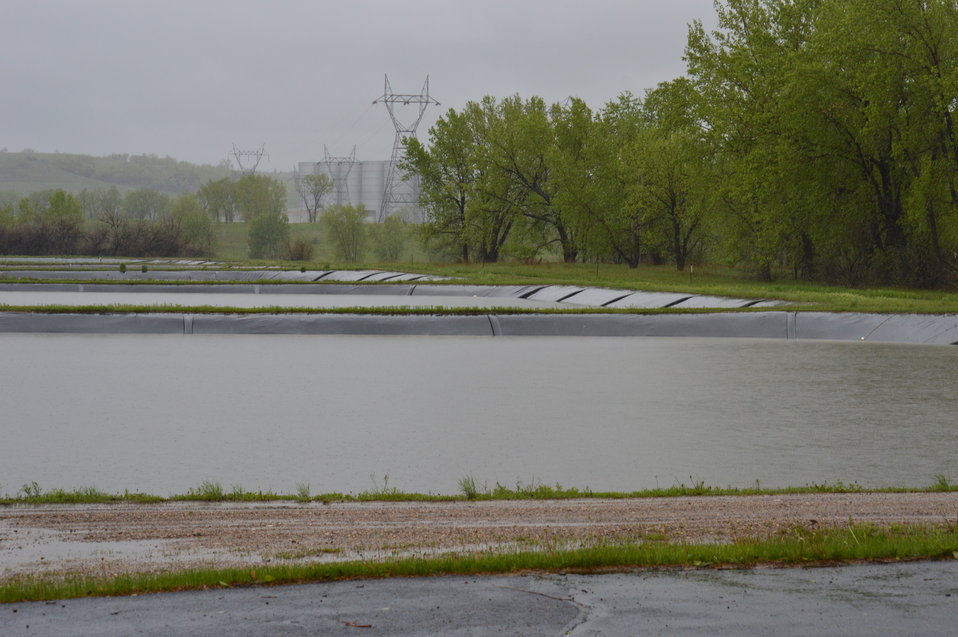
Hatching ponds

Garrison Dam National Fish Hatchery in North Dakota.